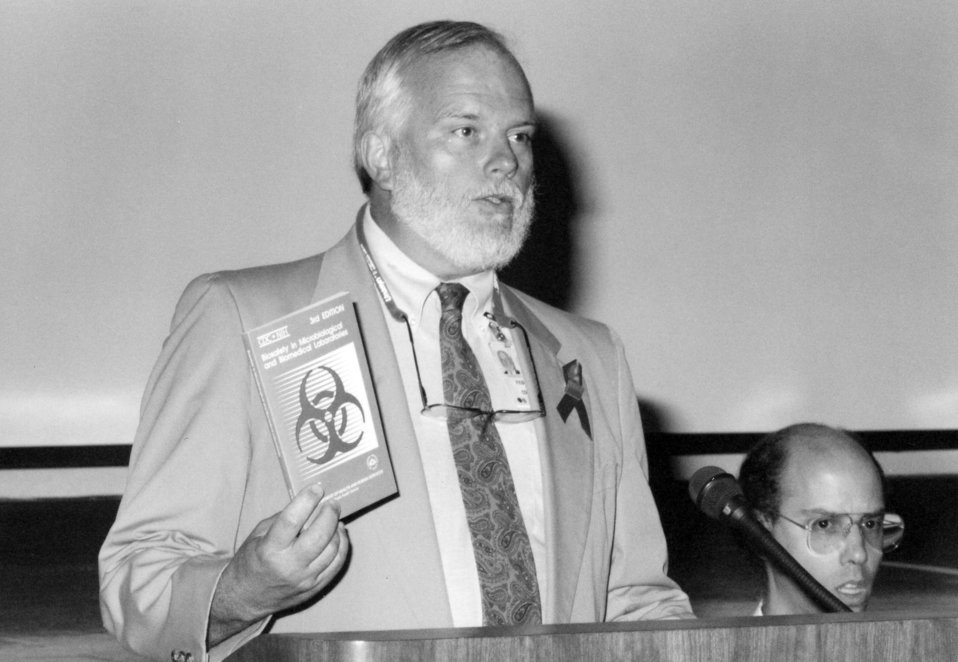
This photograph shows Dr. Jonathan Richmond, who at the time was the Director of the Centers for Disease Control's Office of Health and Safety, as he was addressing colleagues on topics concerning issues surrounding laboratory safety during Safety Awareness Week, 1993.